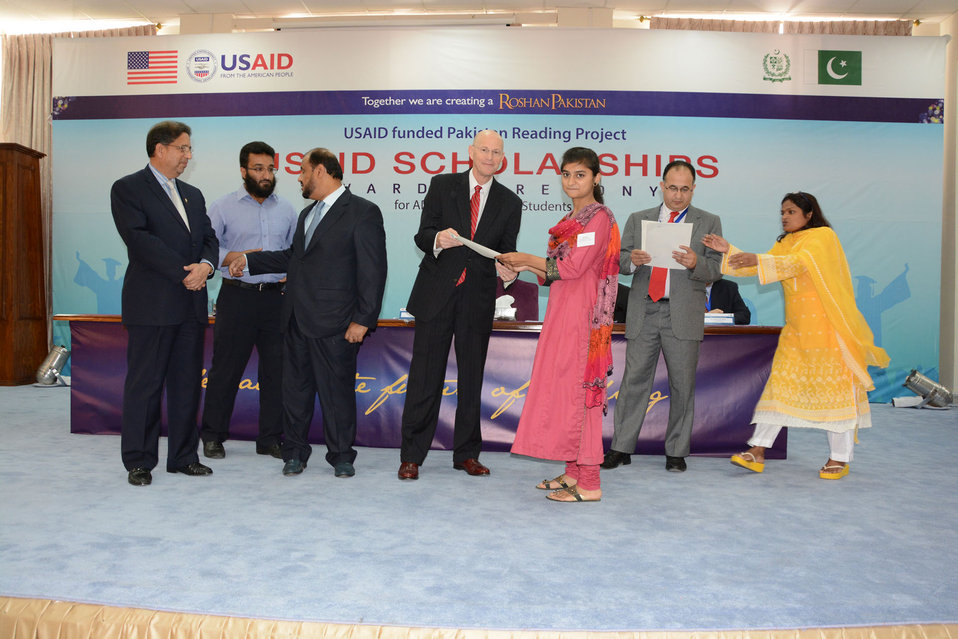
IIUI Teacher Education Scholarships 04